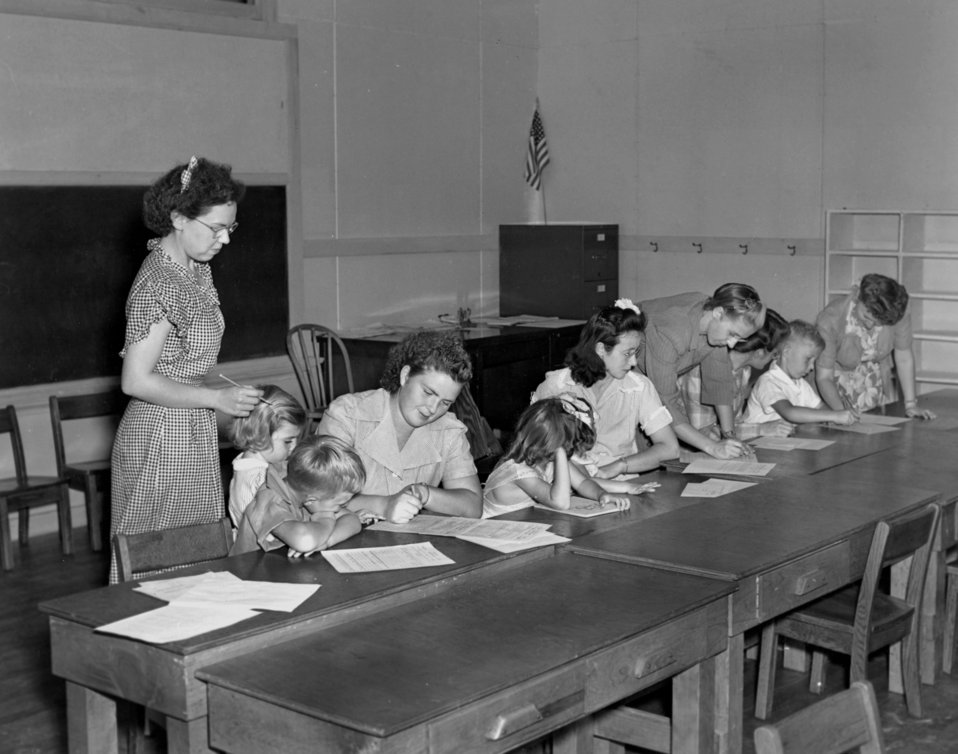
School Registeration Wheat School Oak Ridge 1944

pro12 DOE photo Ed Westcott 9-7-1944 Oak Ridge Tennessee